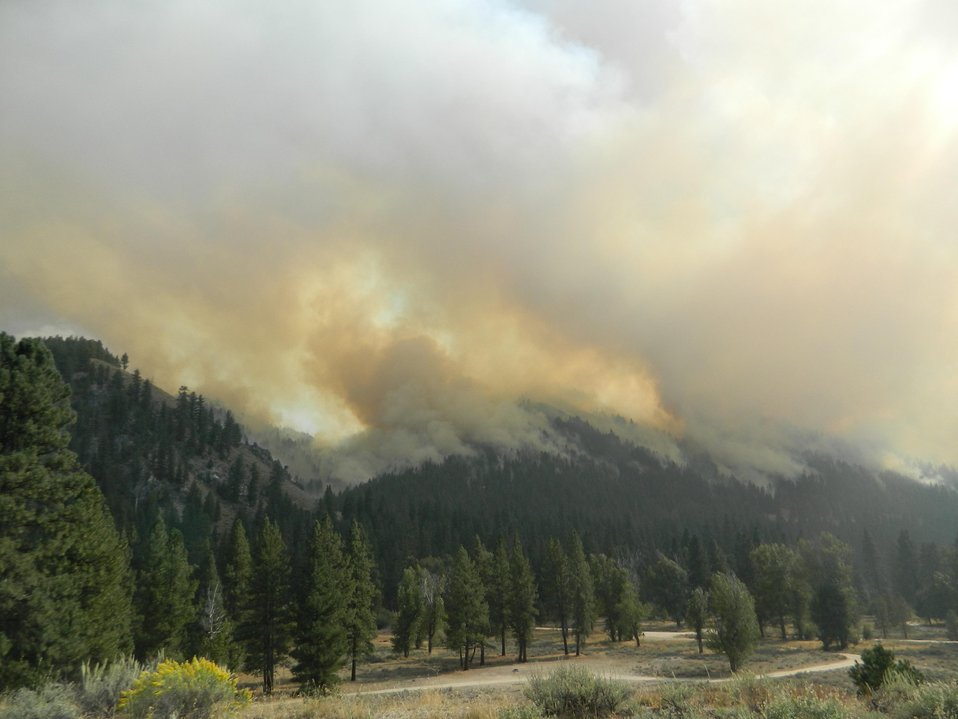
The Kelley Fire in the Sawtooth National Forest near Featherville, ID began on Aug. 24, 2013 by lightning and has consumed approximately 17,346 acres and is 97% contained.